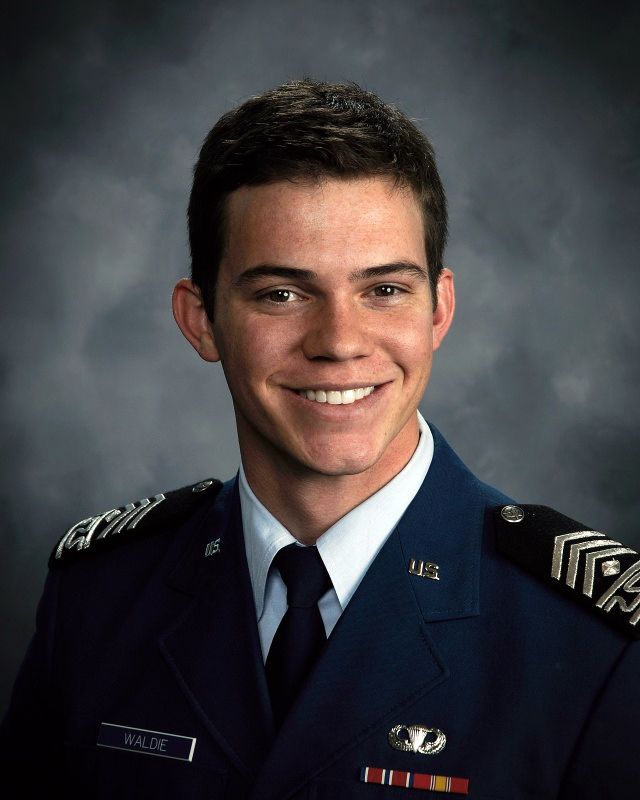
Academy cadet earns scholarship to study at Oxford

U.S. Air Force Academy Cadet 1st Class Bradford Waldie recently received a Bart Holaday scholarship for two years of study at Oxford University of England. Cadet Waldie is a native of Phoenix and a double major in foreign area studies and humanities.